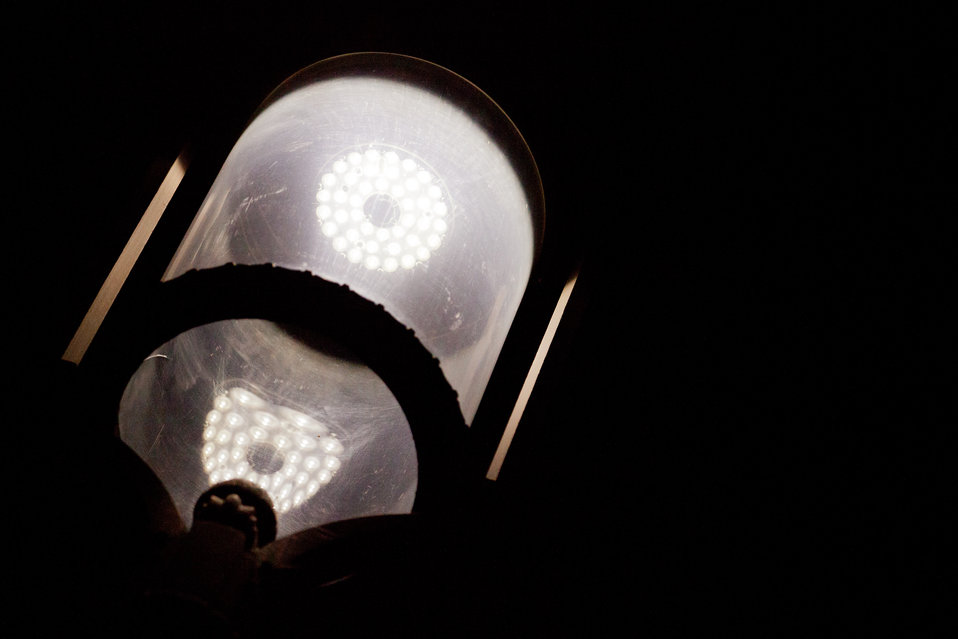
Close up of an LED light, provided by OSRAM Sylvania, that has been retrofitted into a vintage, Olmsted light fixture. Pepco, the DC area utility who installed the original fixtures in the 1930's, also did the installation of the new LED fixtures.